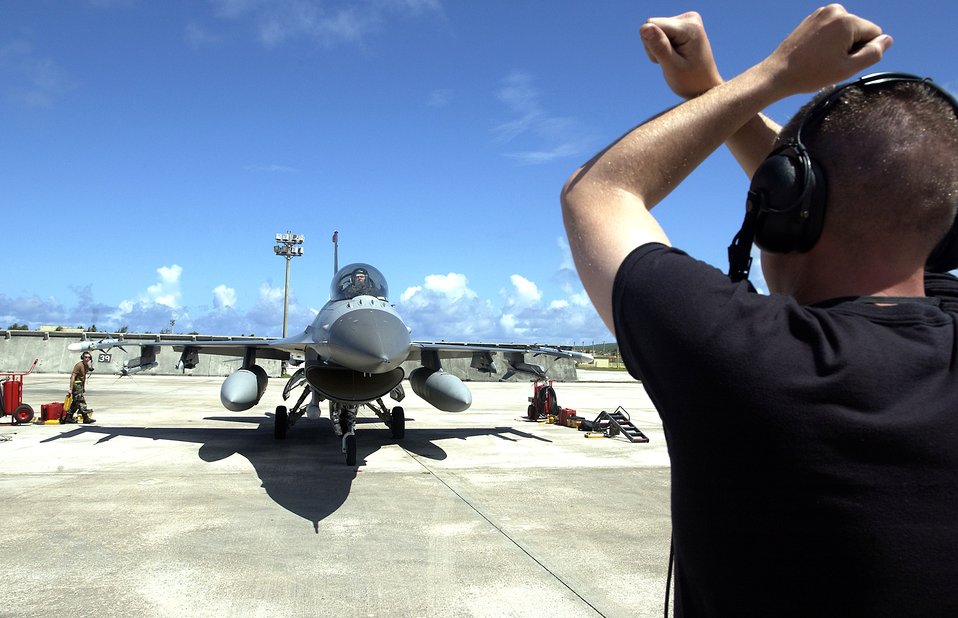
Valiant Shield kicks off

Airman 1st Class Brian Emerson marshals an F-16 Fighting Falcon at Andersen Air Force Base, Guam, after a training sortie at Exercise Valiant Shield 2006 on Monday, June 19. Valiant Shield focuses on integrated joint training and interoperability among U.S. military forces while responding to a range of mission scenarios. Airman Emerson is assigned to the 35th Aircraft Maintenance Squadron at Misawa Air Base, Japan.